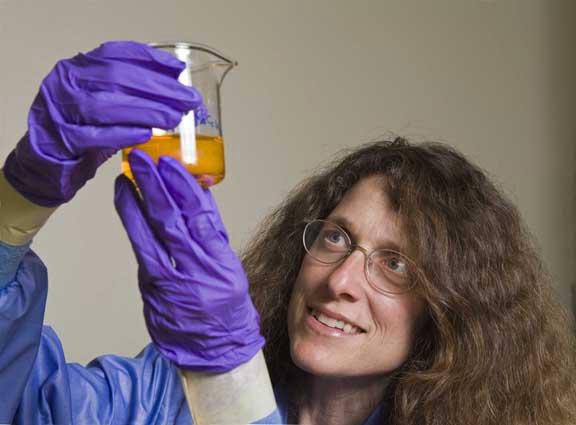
Sandia researcher investigates radioactive materials in a beaker of dissolved uranium and templates from which crystals will grow.

Shown is the researcher's gloves taped to her coat, effectively prevent any contact from possible spillage of hot materials. The radioactivity of this particular mix is fairly low, on par with thorium lantern mantles sold in camping equipment shops.